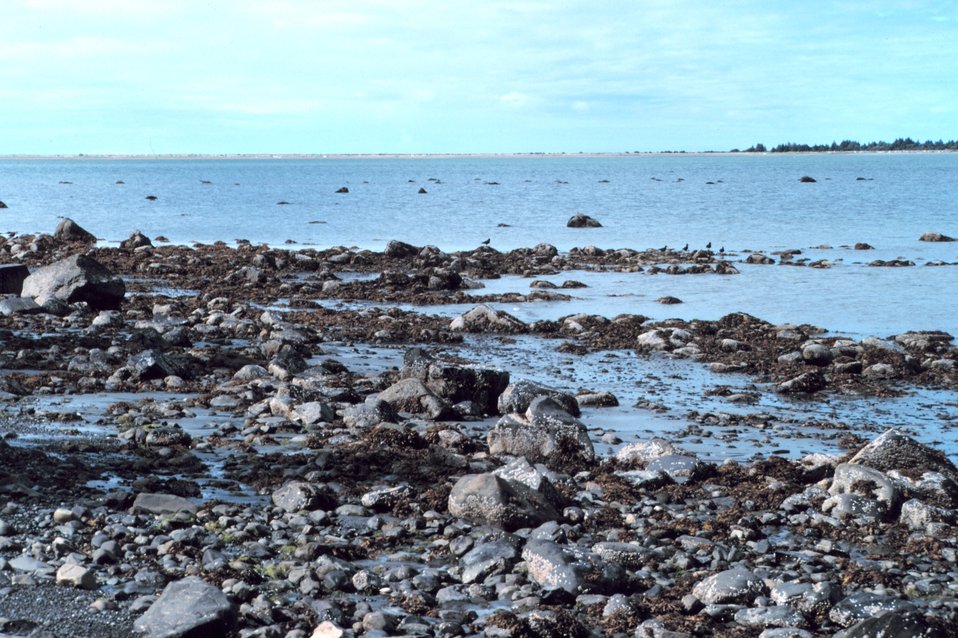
Low tide along a rocky beach in the Icy Bay area.